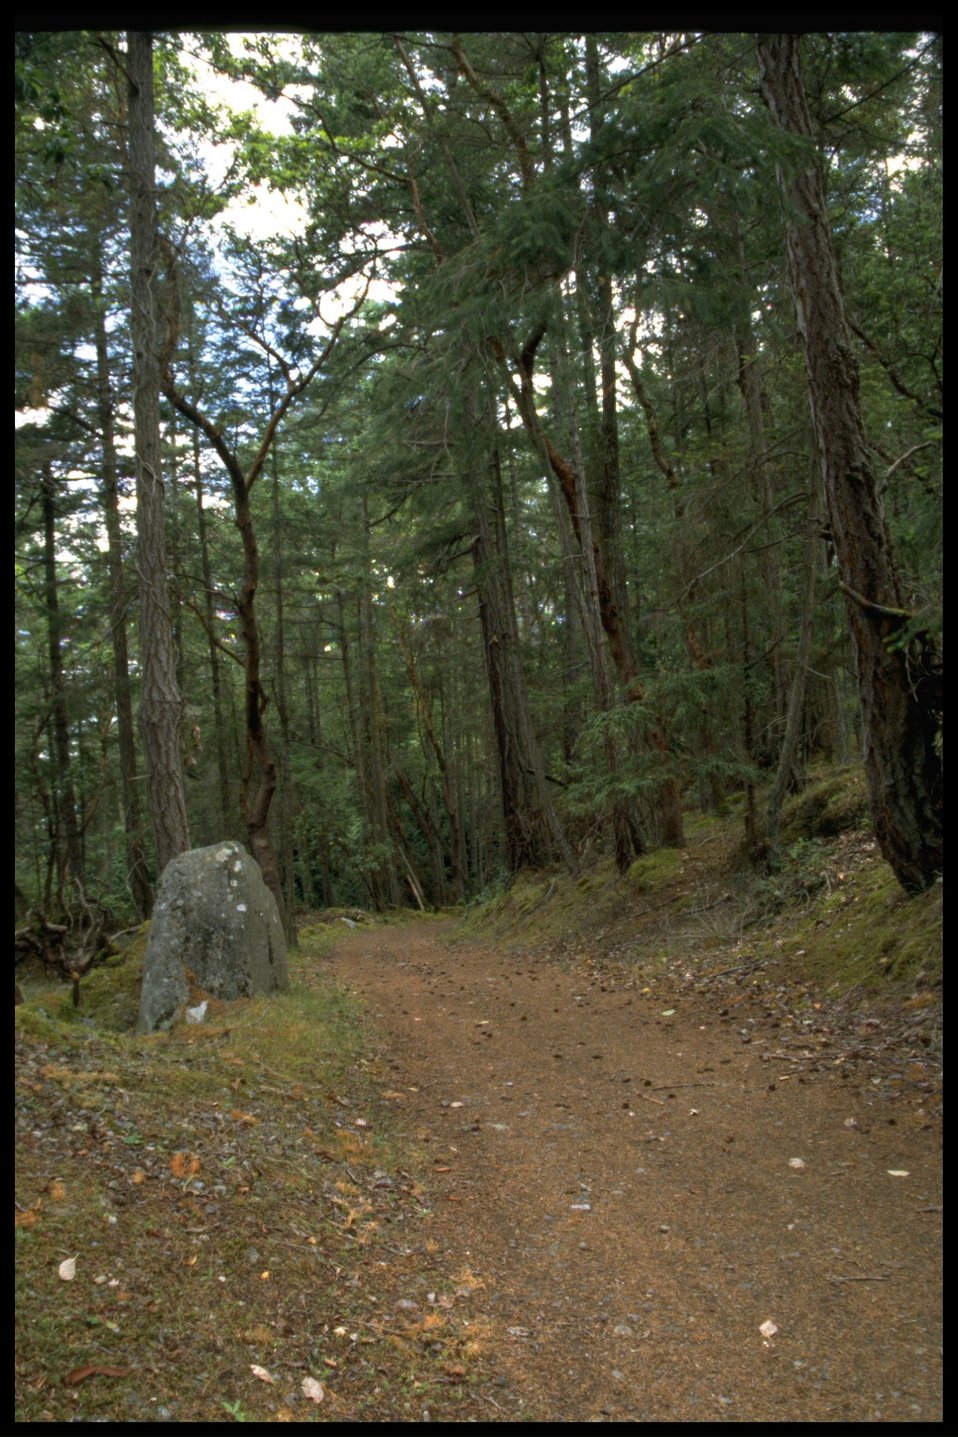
Path leading up to view point at Turn Point.